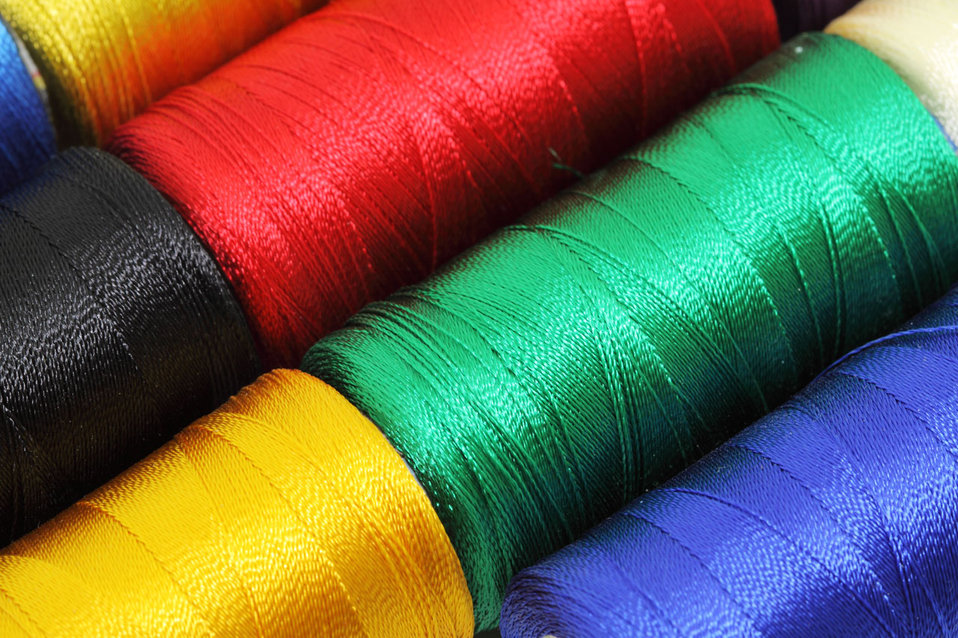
Detail of sewing thread

Sewing thread background.